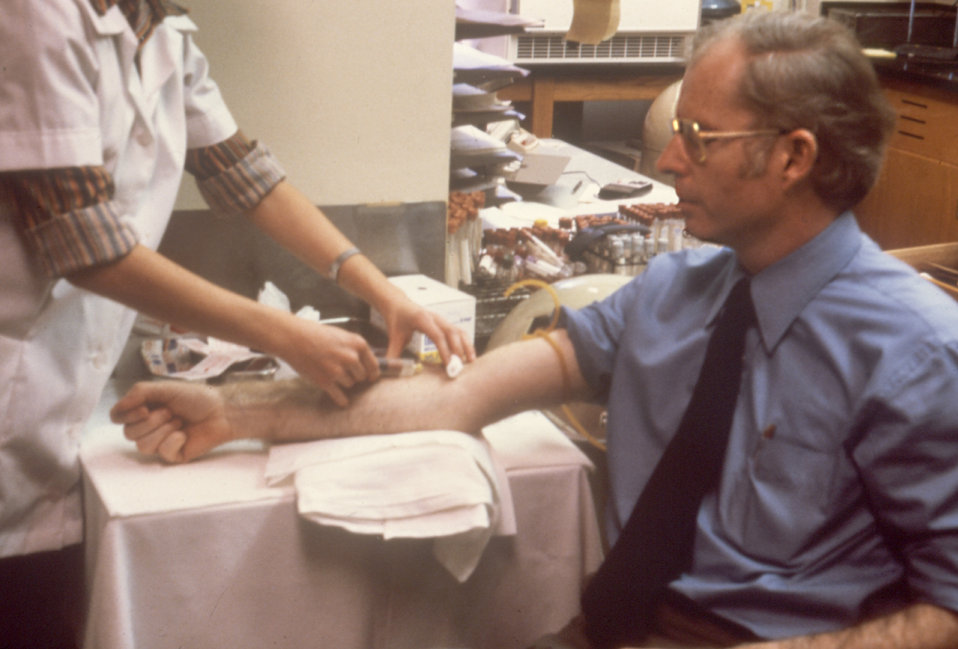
This medical technologist is obtaining a blood specimen from a patient during a test for L. pneumophila bacterium.